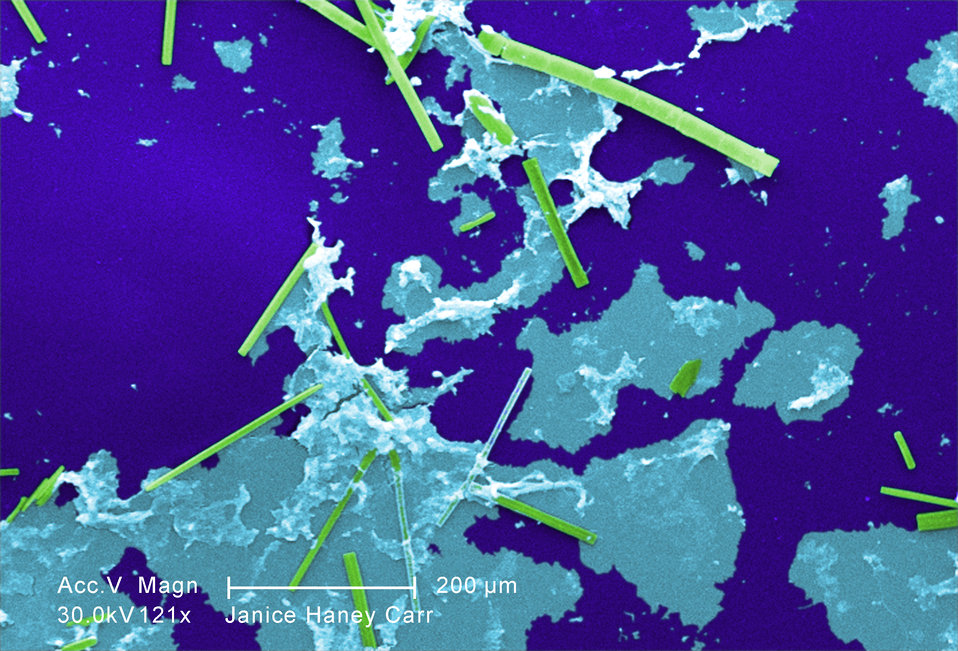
Under a relatively low magnification of 121X, this digitally-colorized scanning electron micrograph (SEM) of an untreated water specimen extracted from a wild stream mainly used to control flooding during inclement weather, revealed the presence of unidentified organisms, which included bacteria, protozoa, and algae. In this particular view, numbers of what appeared to be rod-shaped sections of various sizes were scattered throughout the field of view, which though unconfirmed, may have been vegetative in nature, and possibly algal organisms. There were also patches of biofilm present as well.